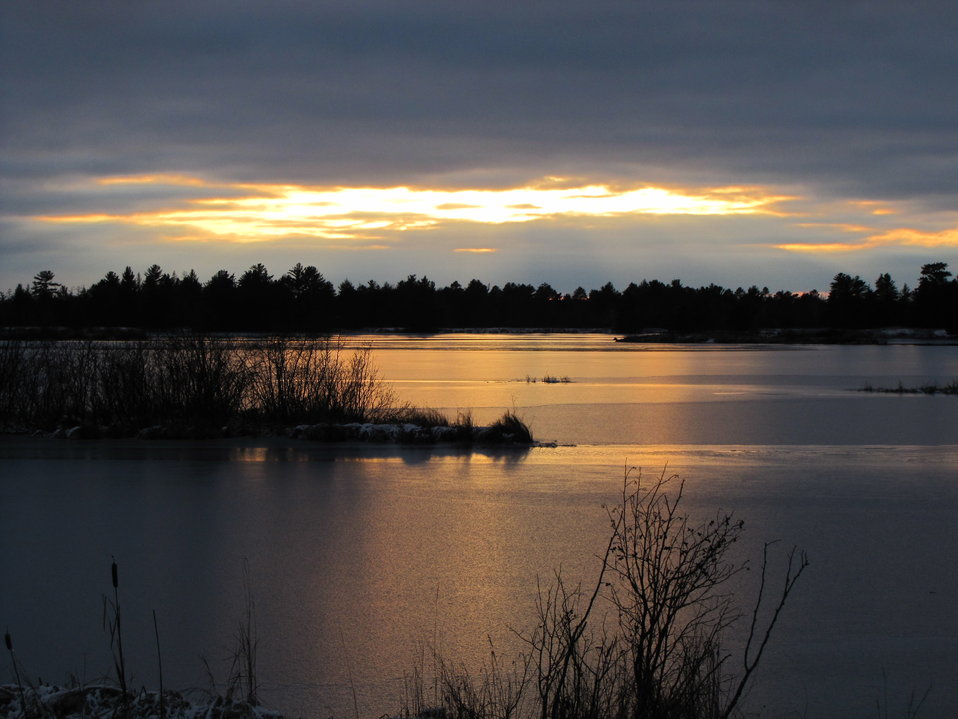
Winter Sunset

Sunset over frozen pond at Seney National Wildlife Refuge.